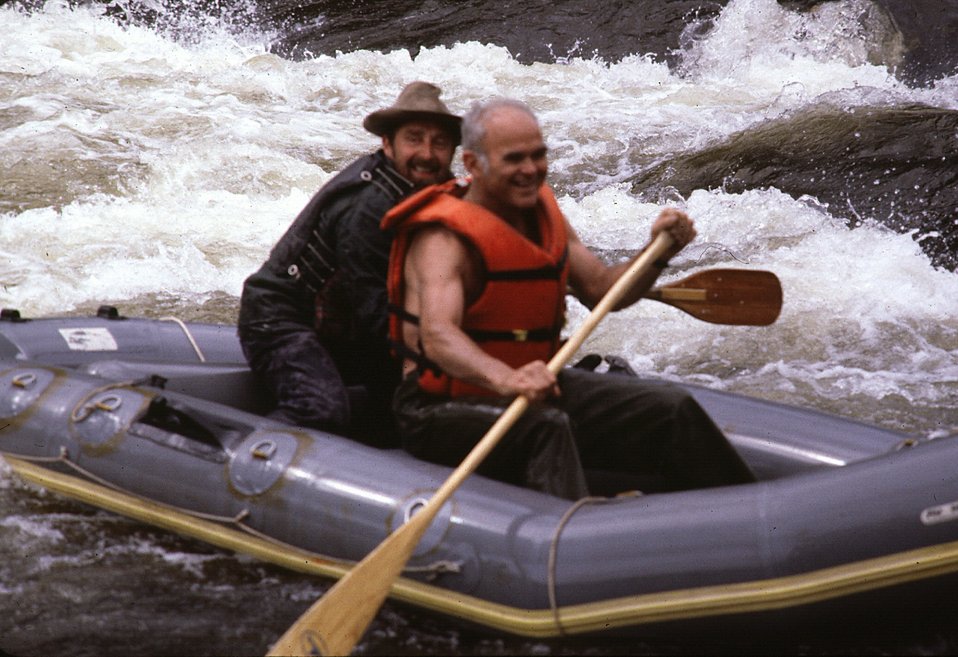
Canyon Rapids, Gulkana NWSR